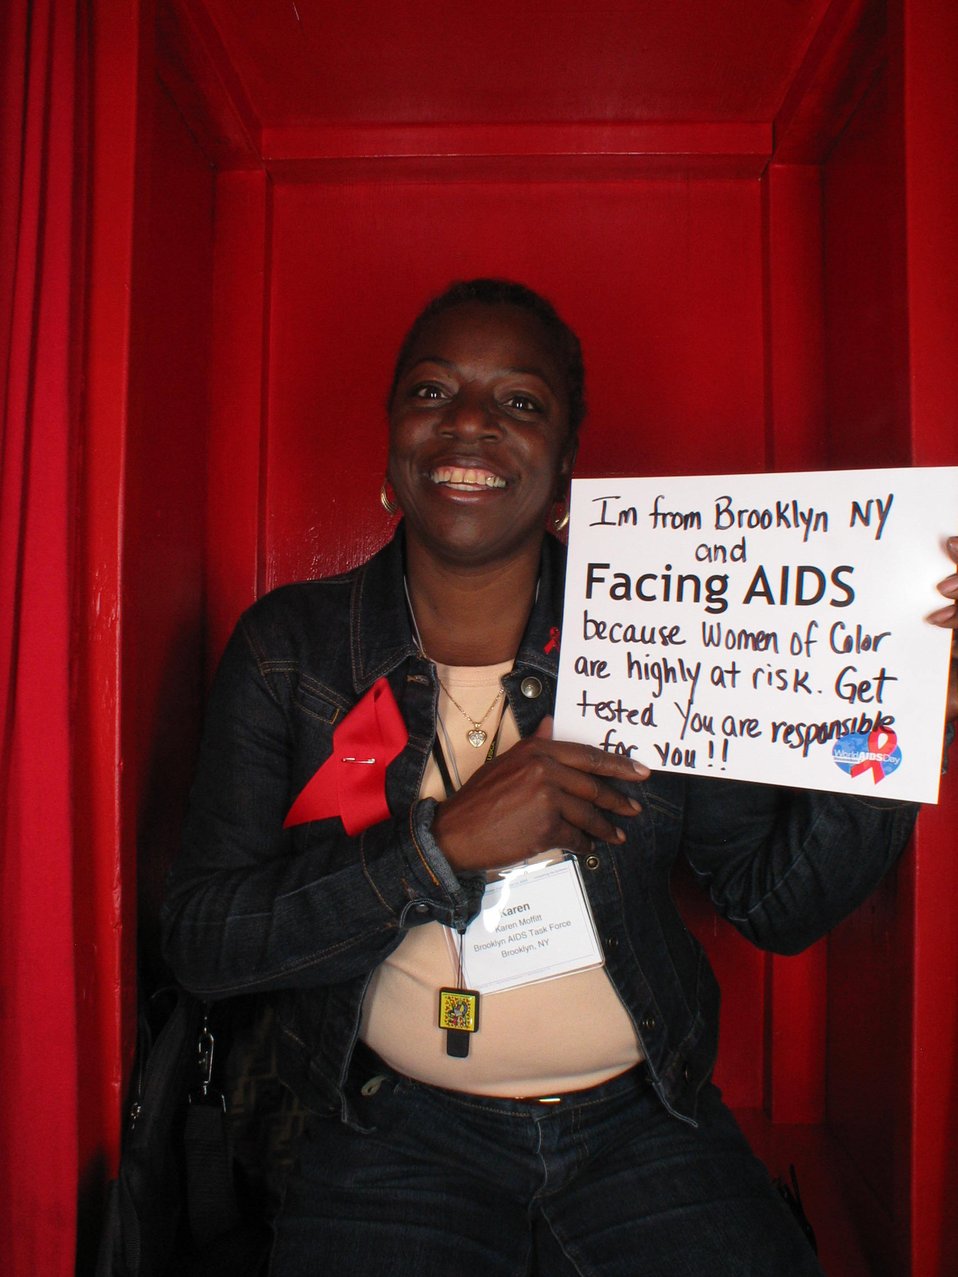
I am from Brooklyn NY and Facing AIDS because Women of Color are highly at risk. Get tested. You are responsible for you.